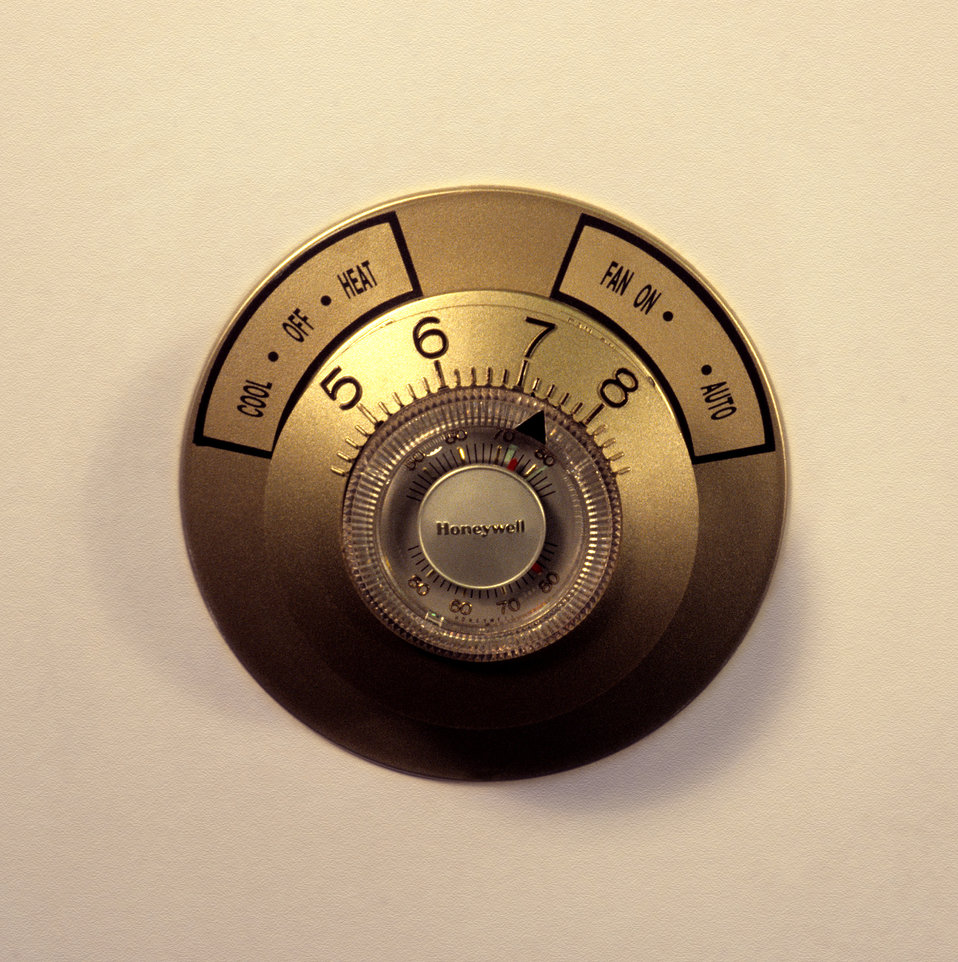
This 1997 image depicted an enlarged view of a thermostat that had been designed with features, which took into account the needs of end users such as those with vision impairments. Design elements included easily detectable tactile surface variations, enlarged numerals, a large, easily rotatable control dial, and a click noise cue as the temperature was being set, helped to negate difficulties that might be encountered by such visually, or mobility-impaired individuals.